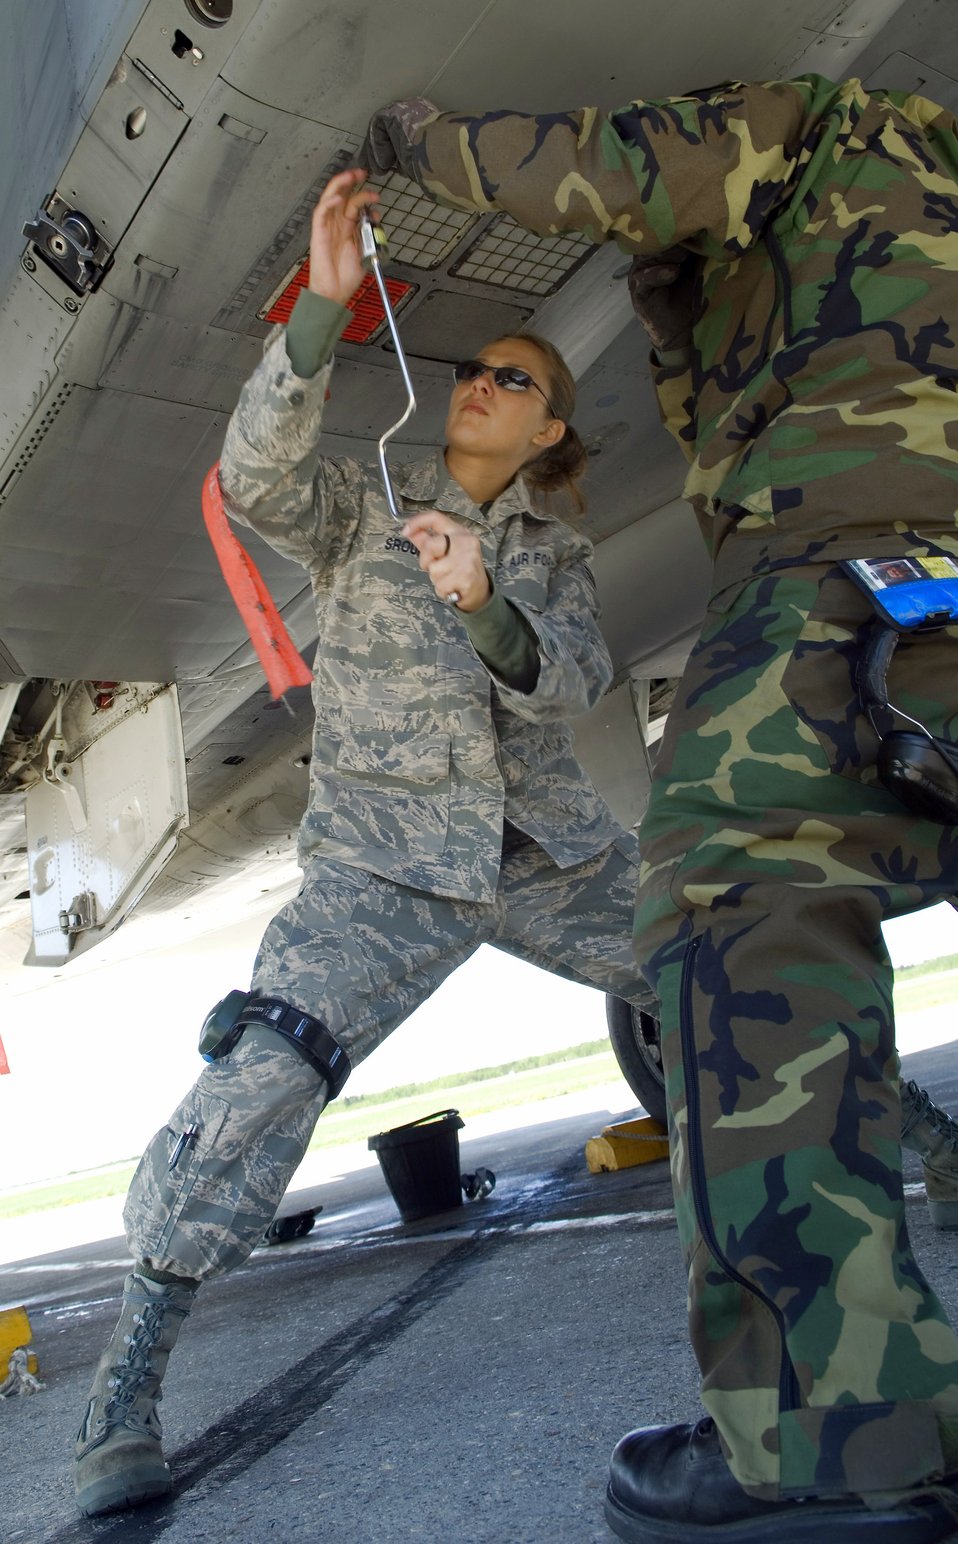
Maple Flag Exercise

Senior Airman Amanda Sroufe replaces chaff and flares on a F-15C Eagle during the Maple Flag Exercise at Cold Lake, Canada. Maple Flag 41 is a four-week international air combat exercise held annually at 4 Wing Cold Lake, Alberta. The exercise provides Canadian and allied aircrew with realistic training in a modern simulated air combat environment, and emphasizes air operations involving large package coalition forces.